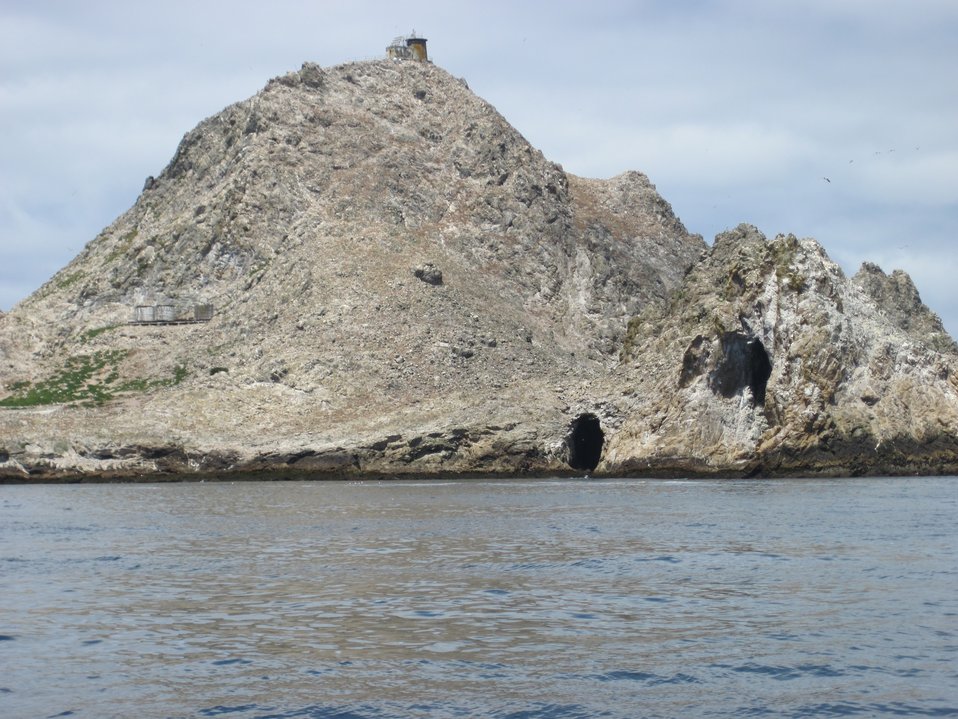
ashy storm-petrel habitat

Southeast Farallon Islands